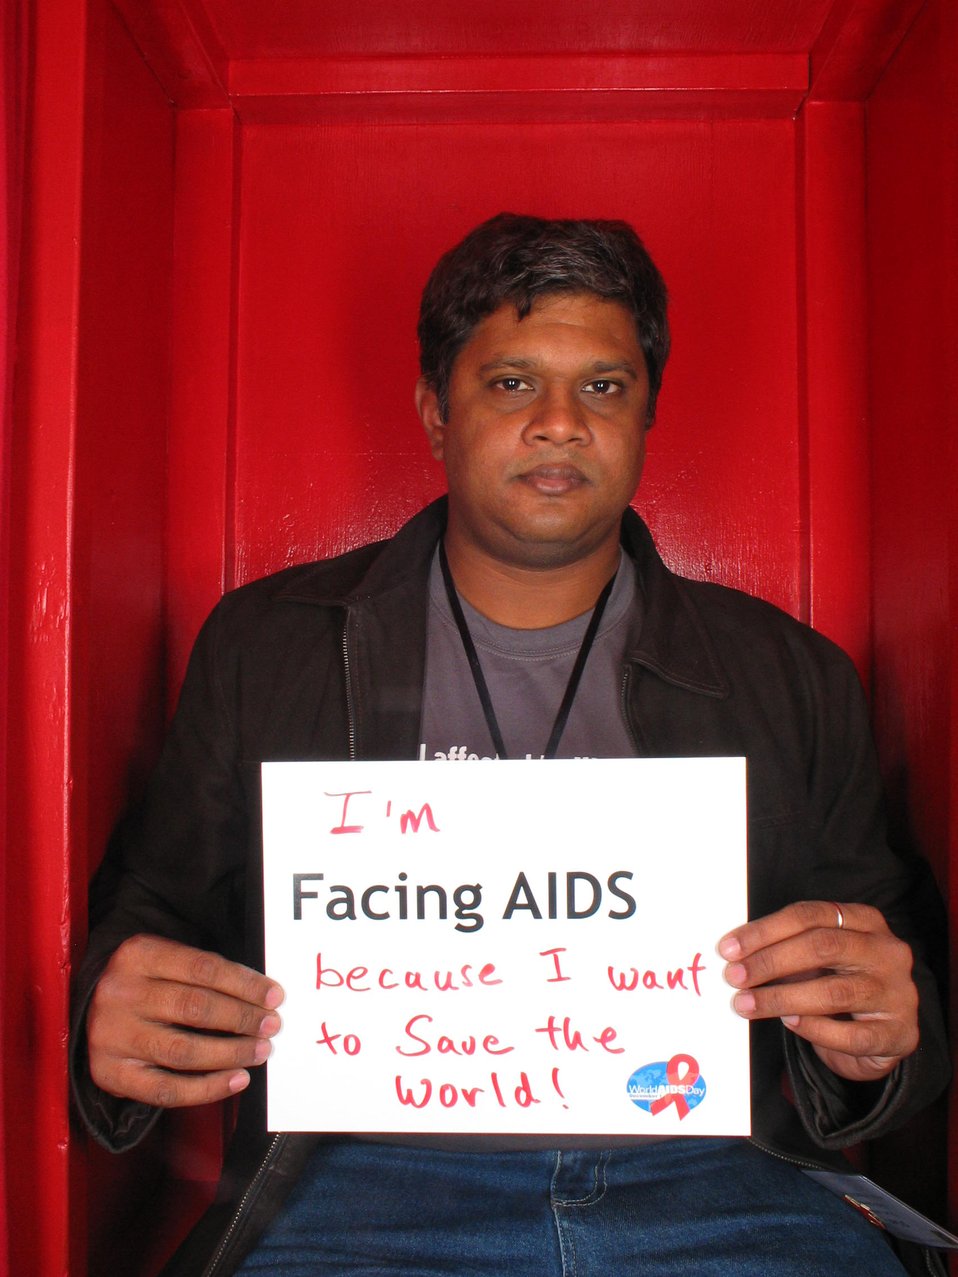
I am Facing AIDS because I want to Save the World!